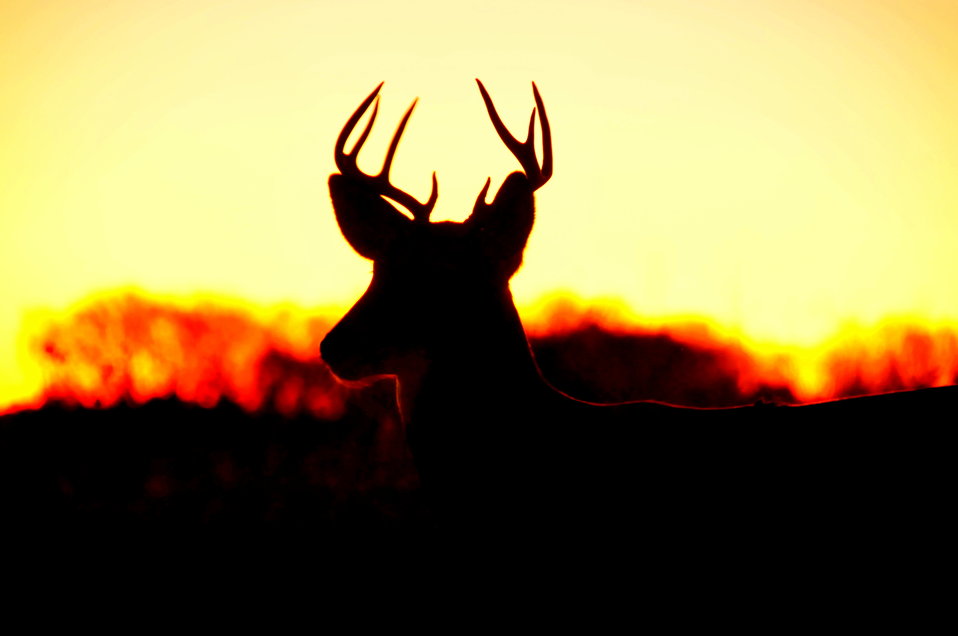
White tailed deer at sunrise Lacreek NWR

A white-tailed deer backlit by the rising sun at Lacreek NWR.